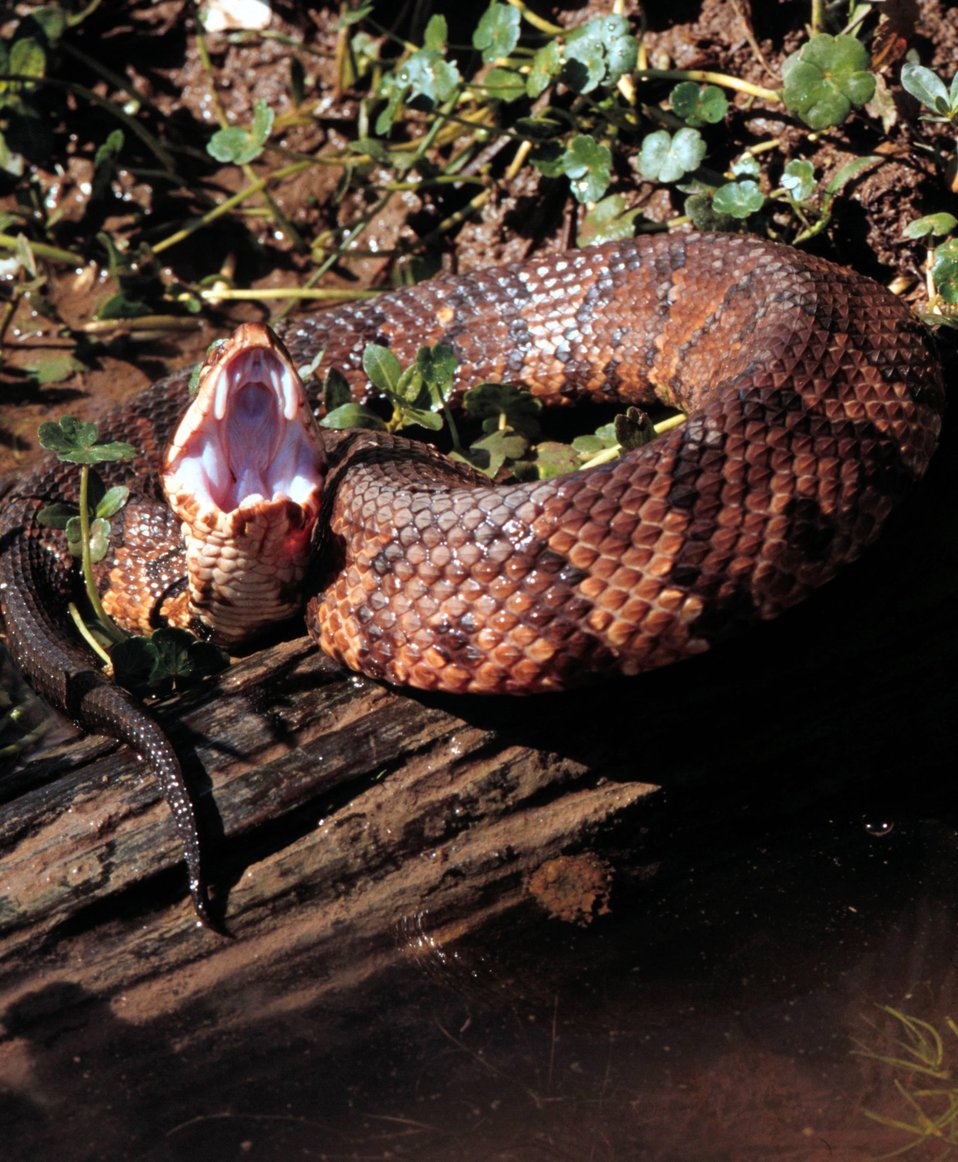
A COTTON MOUTH WATER MOCCASIN AT THE SAVANNAH RIVER SITE.

THIS IS ONE OF THE SPECIES OF REPTILES AT THE SITE THAT IS BEING TRACKED AND STUDIED BY THE SAVANNAH RIVER ECOLOGY LABORATORY. SREL PROVIDES AN EVALUATION OF THE ECOLOGICAL EFFECTS OF SRS OPERATIONS THROUGH A PROGRAM ECOLOGICAL RESEARCH, EDUCATION AND OUTREACH.